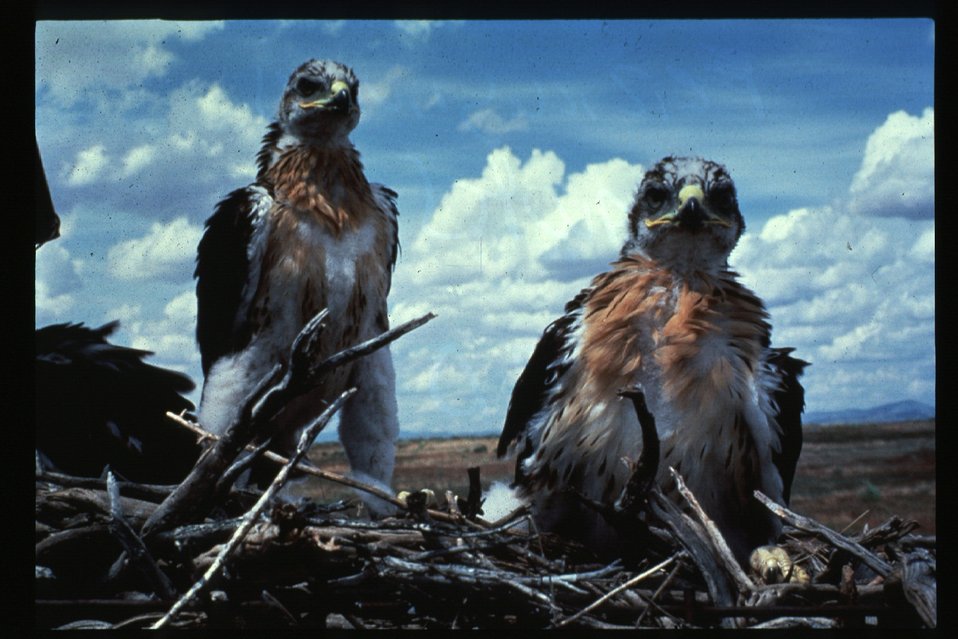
Ferruginous Hawks Wildlife BOP NCA Birds of Prey National Conservation Area Owyhee Field Office LSRD Lower Snake River District